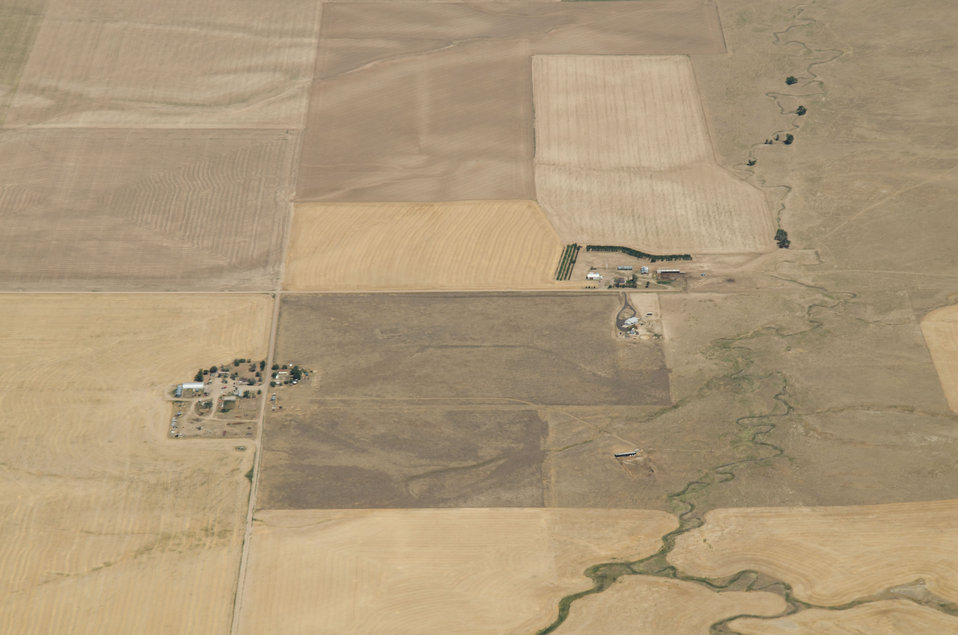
Aerial views of drought affected Colorado farm lands near Strasburg, Colorado, on Saturday, July 21, 2012.